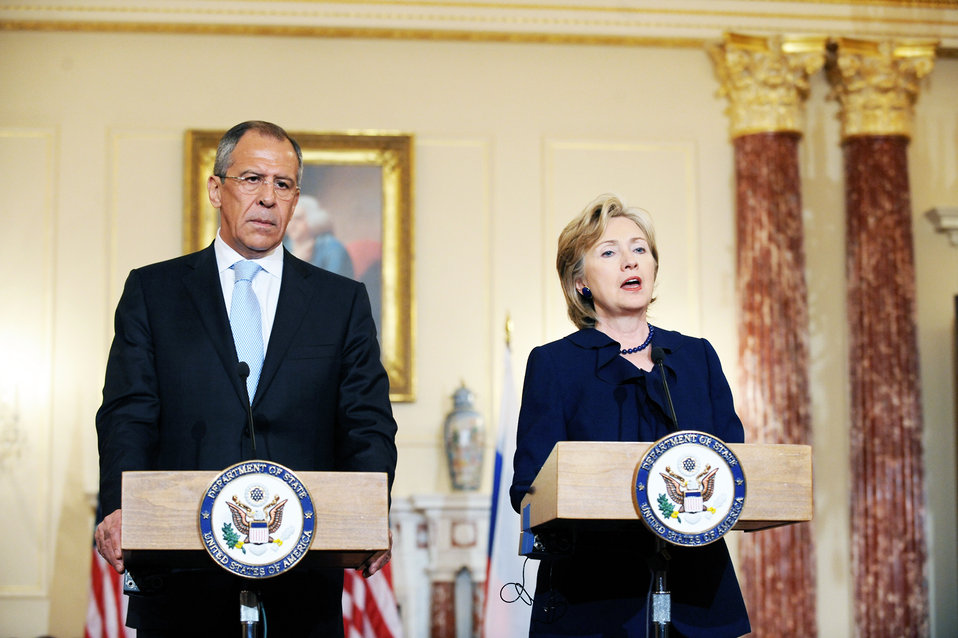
Secretary Clinton Meets With Russian Foreign Minister

U.S. Secretary of State Hillary Rodham Clinton hosts a bilateral meeting with Russian Foreign Minister Sergey Lavrov at the U.S. Department of State in Washington, DC May 7, 2009.